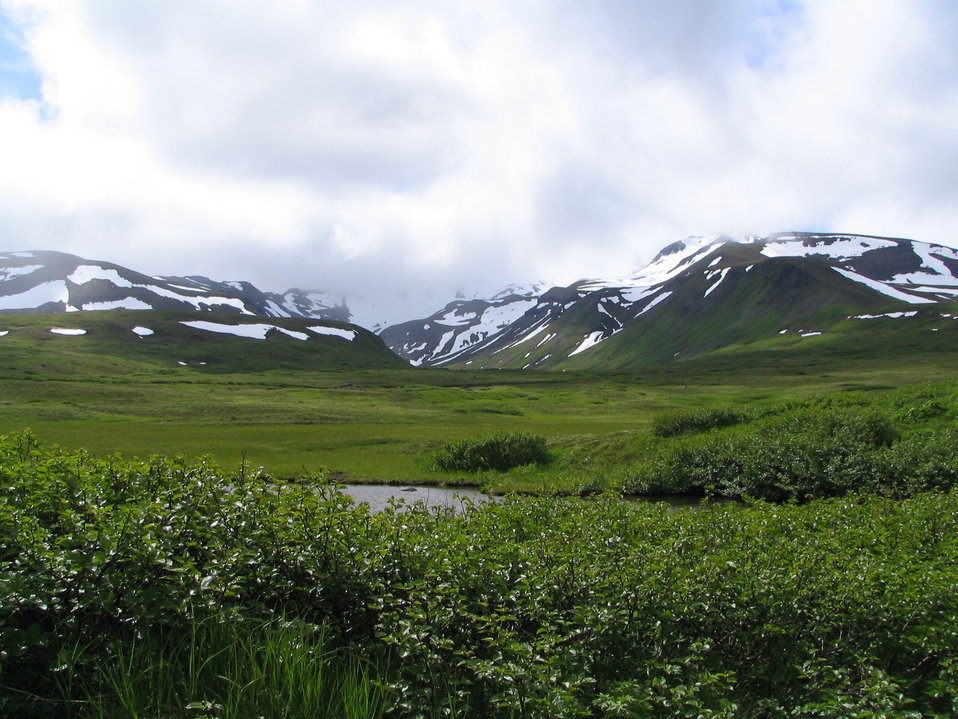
Izembek Wilderness

Wilderness near Frosty Peak, Izembek National Wildlife Refuge
Photo by Kristine Sowl,
USFWS, Public Domain